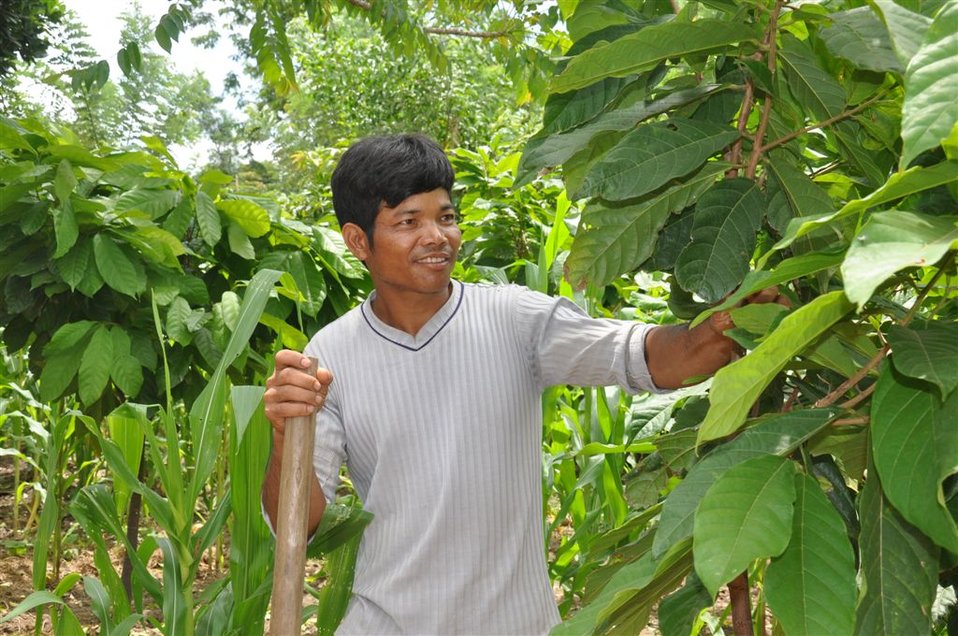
Local populations benefit from new cocoa crop techniques and market access.